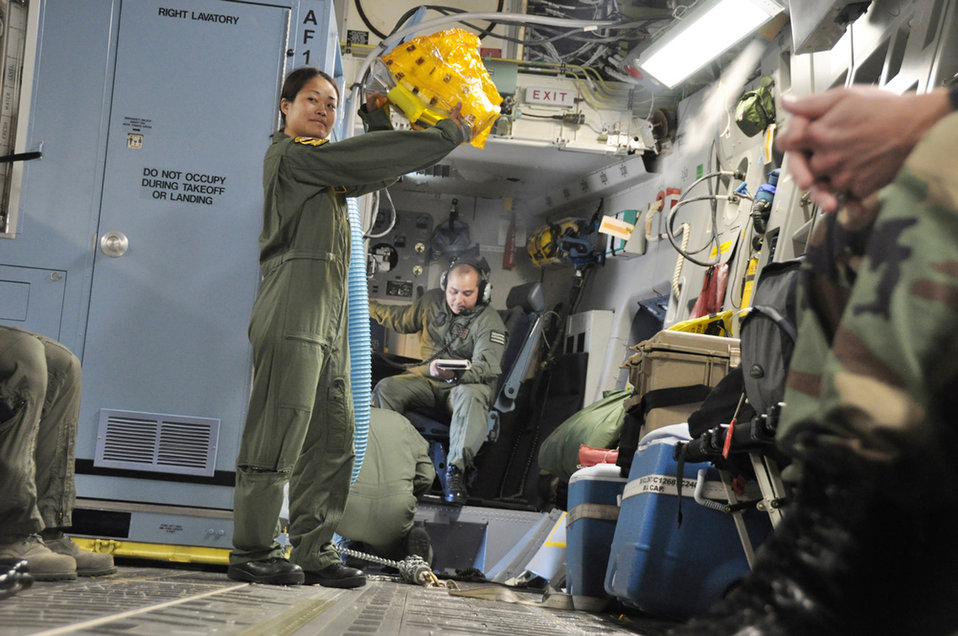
Hawaii Guard members give Pacific Angel a lift

Tech. Sgt. Kimberly Kido demonstrates the proper use of the emergency passenger oxygen system to passengers before departing to support of Operation Pacific Angel 2009 from Hickam Air Force Base, Hawaii July 14 for Kupang, Indonesia. Sergeant Kido is a loadmaster with the Hawaii Air National Guard's 204th Airlift Squadron at Hickam.